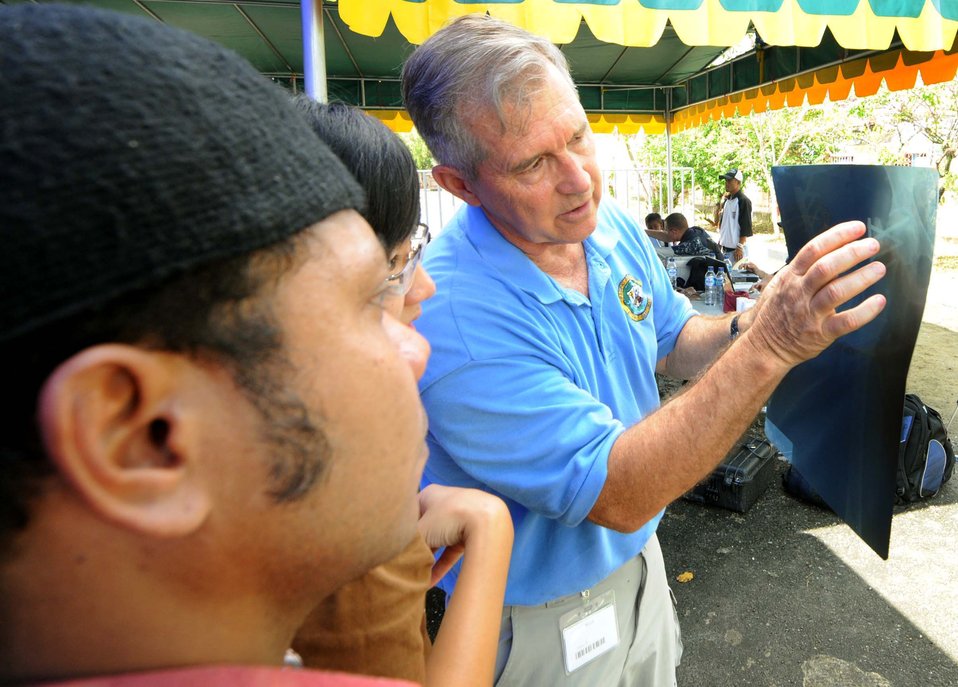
Dr. Mike LeSueur Explains to an Indonesian Patient the Details of His X-Ray

Dr. Mike LeSueur, a volunteer from Latter-day Saint Charities and currently embarked with the Military Sealift Command hospital ship USNS Mercy (T-AH 19), explains to an Indonesian patient the details of his x-ray on July 27, 2010. Mercy is in Ambon, Indonesia, participating in Sail Banda 2010, a series of events hosted by the Government of Indonesia to promote the future of small islands. Mercy’s participation features medical and dental care clinics and construction projects in and around Ambon, as well as on Seram Island.